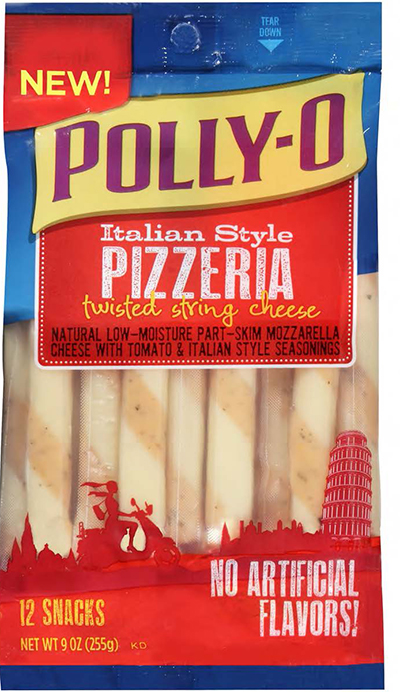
RECALLED – Cheese

October 25, 2013 – Product Recall – Kraft Voluntarily Recalls Some Varieties of Kraft And Polly-O String Cheese And String Cheese Twists Due to Premature Spoilage.